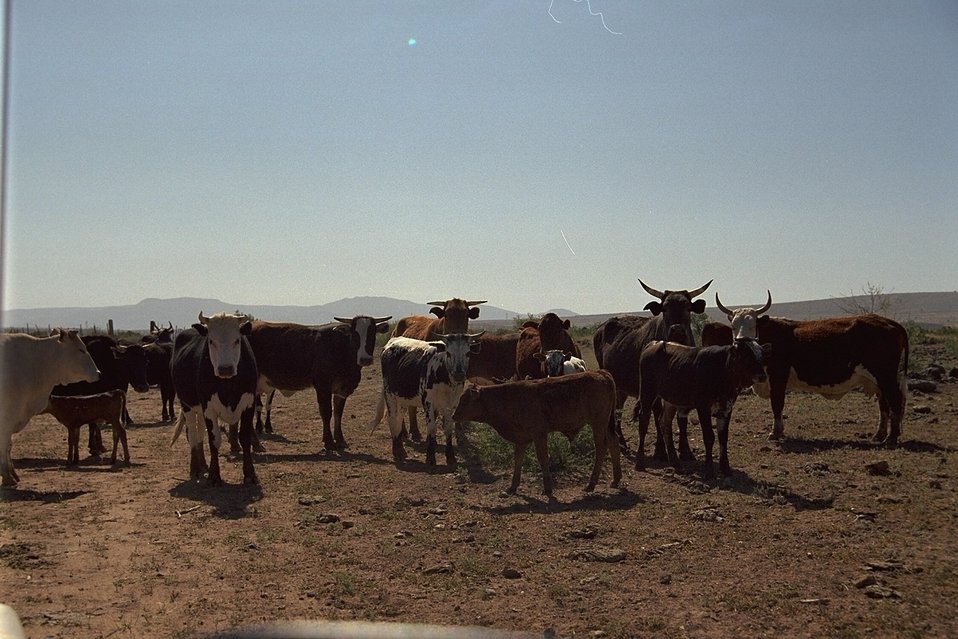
Moo! Cattle Grazing near the Richbar mine site in the Agua Fria National Monument.